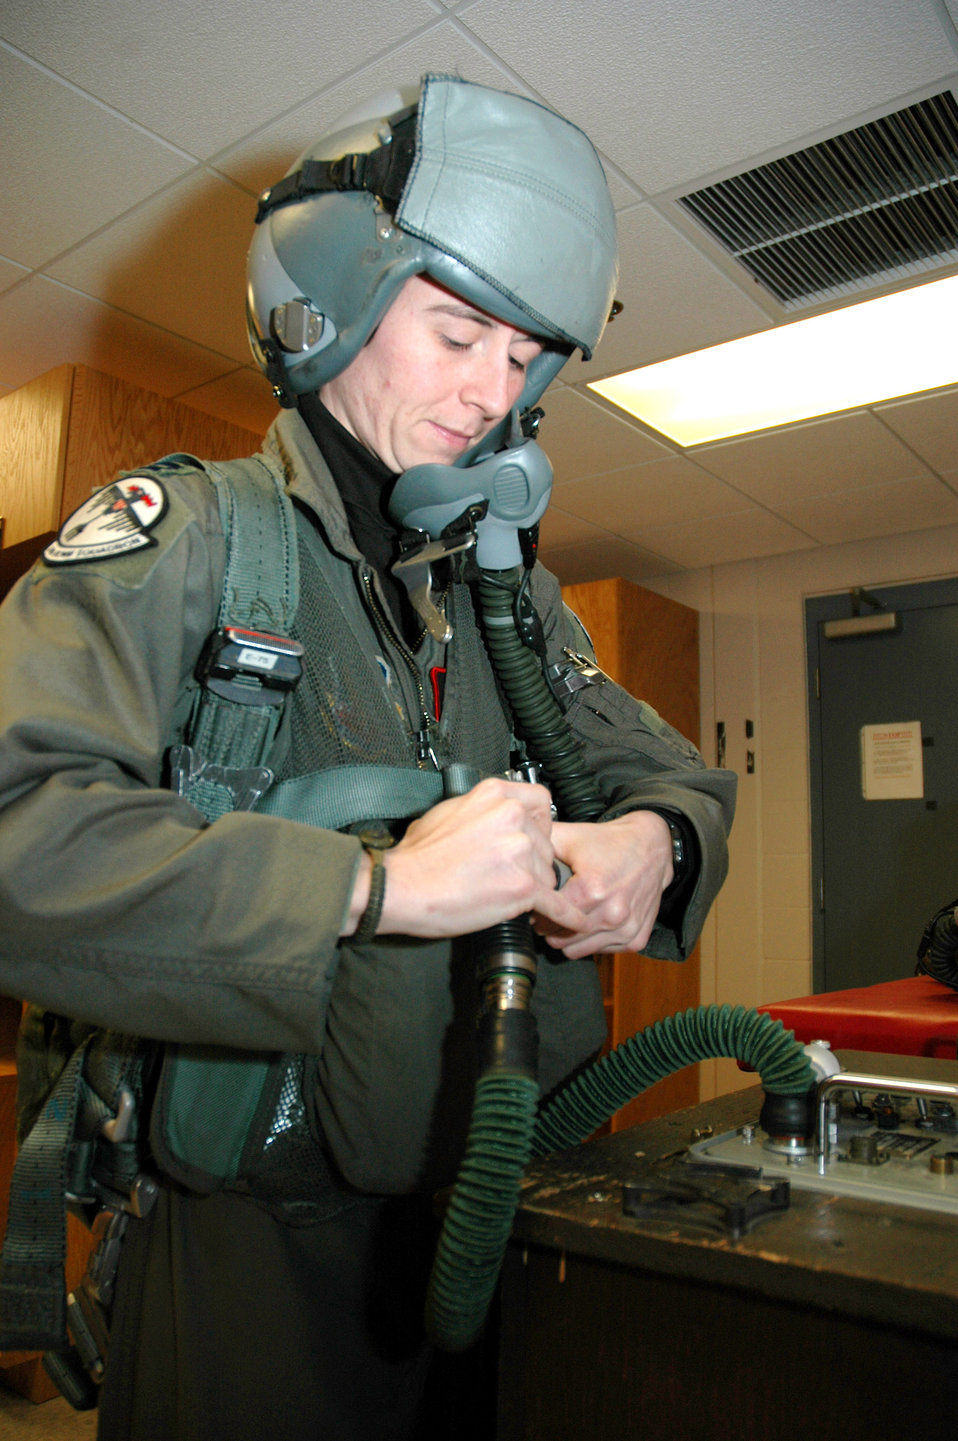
Women command airspace in combat pilot positions

ELLSWORTH AIR FORCE BASE, S.D. -- Capt. Bridget McNamara checks her oxygen mask and the microphone assembly in her helmet March 7. She is a B-1 Lancer pilot assigned to the 34th Bomb Squadron.